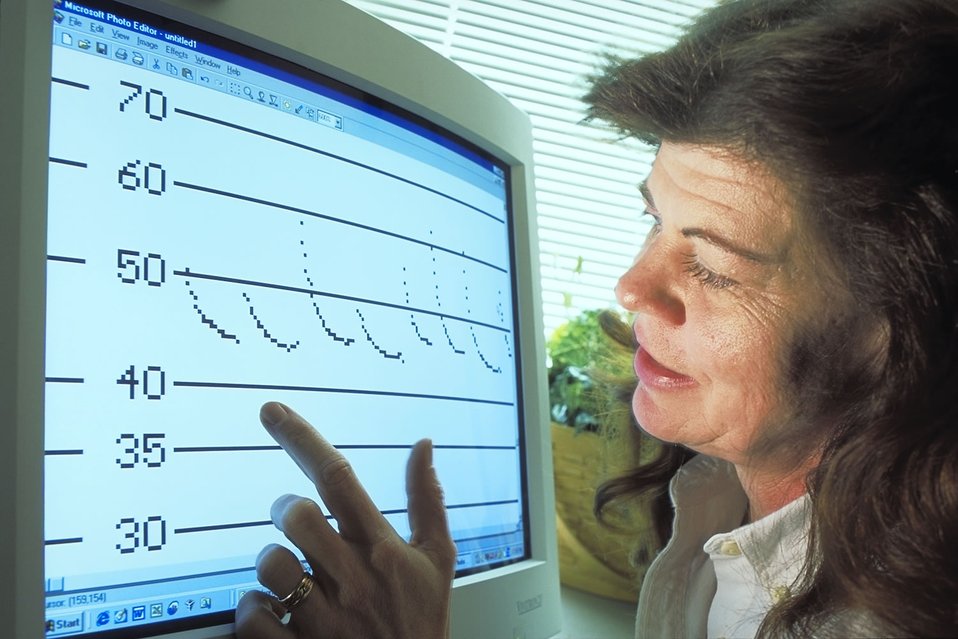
Sybill Amelon

Forest Service research biologist Sybill Amelon’s work on behalf of bat conservation and educational outreach was recognized this year with the Gifford Pinchot Excellence in Interpretation and Conservation Education Award.